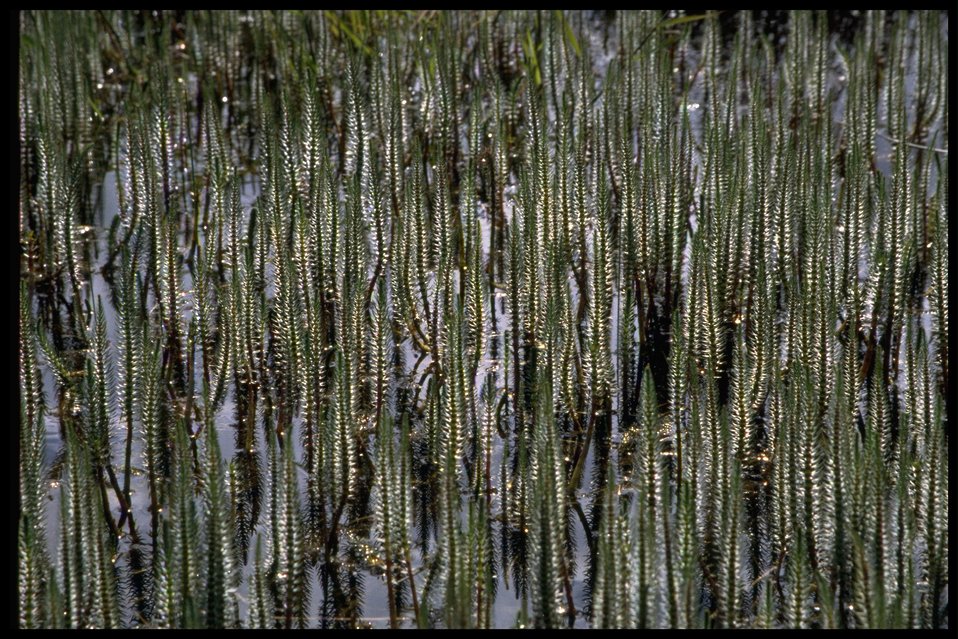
Chadwick Hill Marsh.